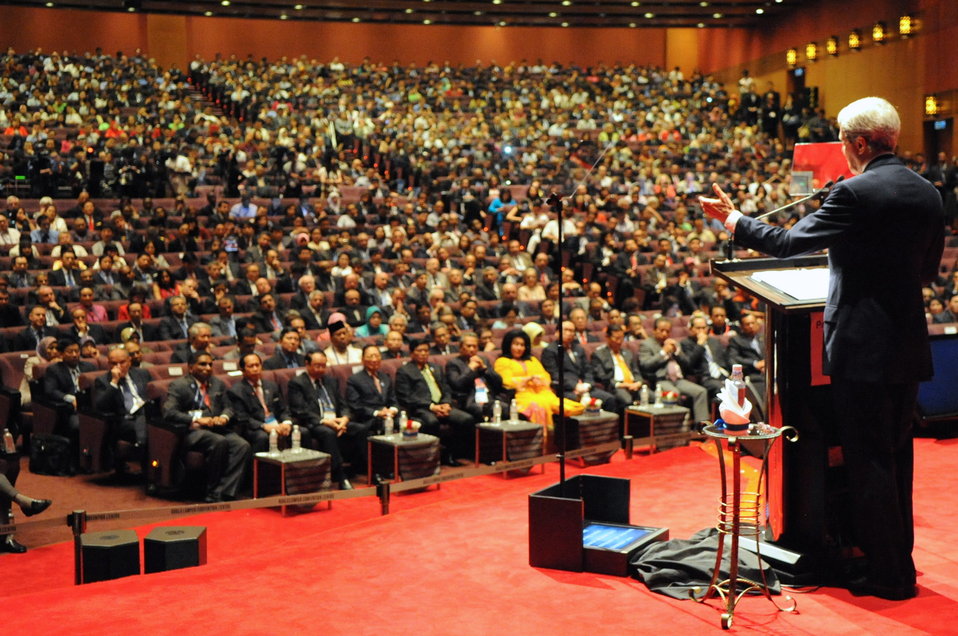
Secretary Kerry Addresses 4th Global Entrepreneurship Summit

U.S. Secretary of State John Kerry addresses the Global Entrepreneurship Summit during a visit to Kuala Lumpur, Malaysia, on October 11, 2013.